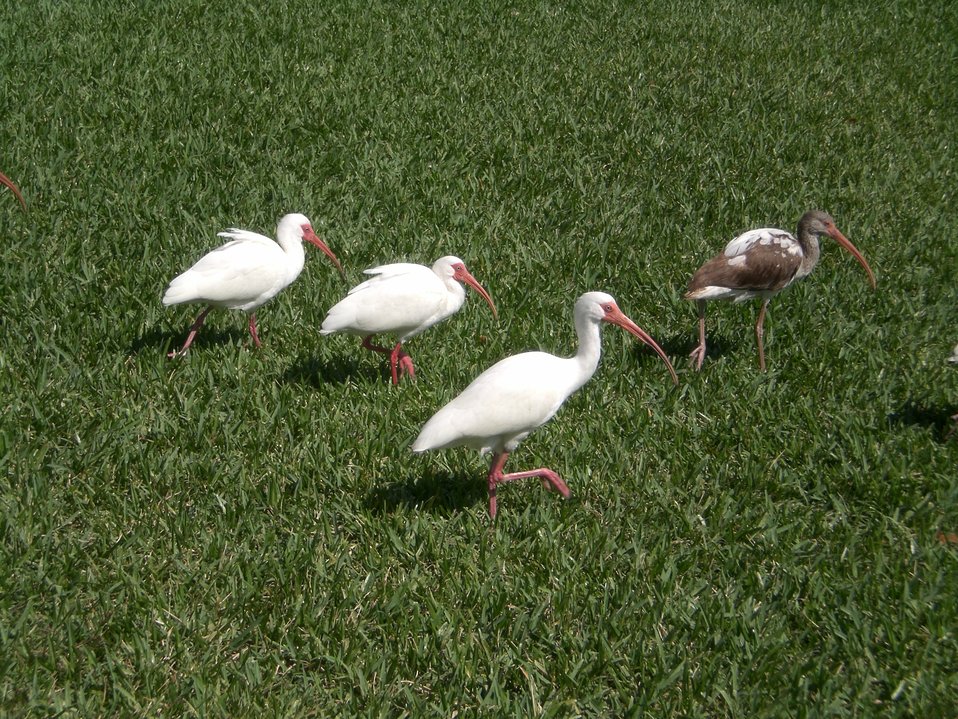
Ibises along the New River in Fort Lauderdale, FL